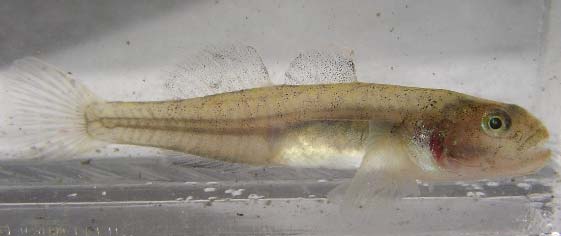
Tidewater goby

Usfws